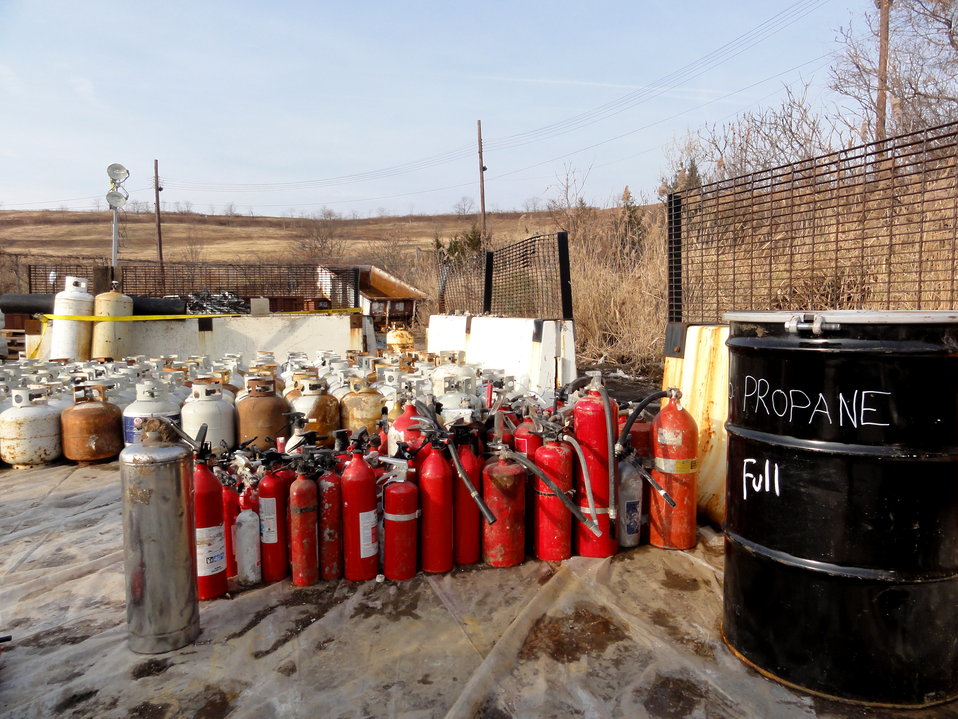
December 2, 2012 - Fire extinguishers, propane tanks organized for disposal.

EPA has been collecting, organizing, and properly disposing of a variety of everyday household items. These items, outside of their proper use, have the potential to be hazardous to human health and the environment.